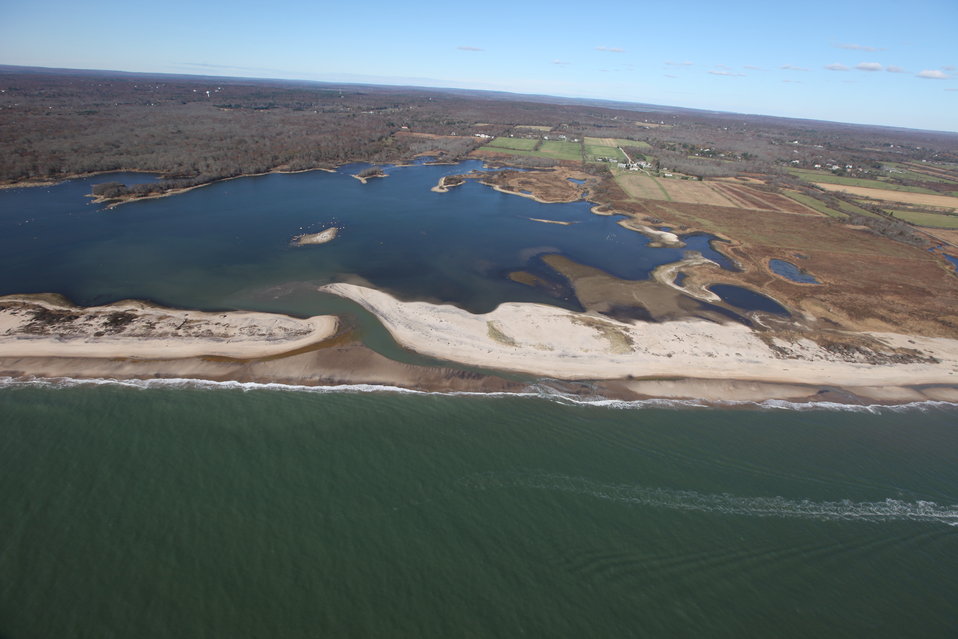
Breach at Trustom Pond (RI)

Breach at Trustom Pond caused by Hurricane Sandy. Trustom Pond had not naturally breached in over a decade prior to Hurricane Sandy.